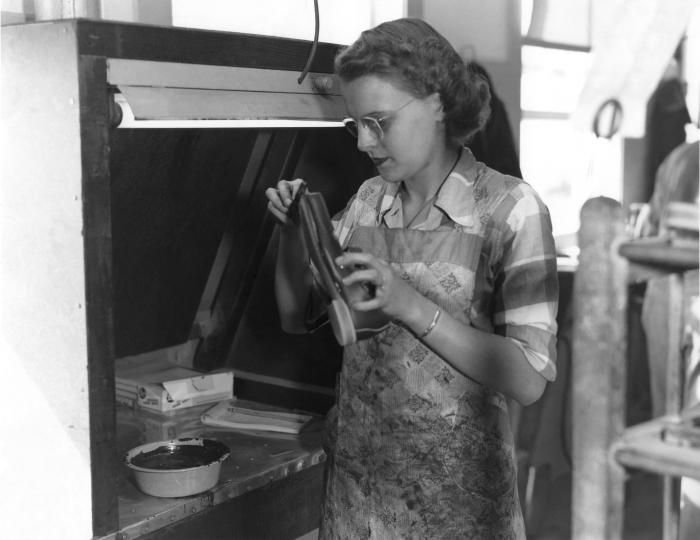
This historical photograph was provided by the Center for Disease Control's (CDC), National Institute for Occupational Safety and Health (NIOSH). It depicted a female industrial worker, who was dying the edge of a shoe by hand, in a Maine factory. The woman was not wearing gloves, nor was she wearing a filtered breathing mask, however, she was working next to a ventilated workstation, equipped with an overhead hood. The toxicity of the chemical fumes, emitted from the dye, could not be determined from this photograph, therefore, whether or not the workplace interior was ventilated, or if ventilation was even needed, is not known. See PHIL 9630 for another view of this scenario.